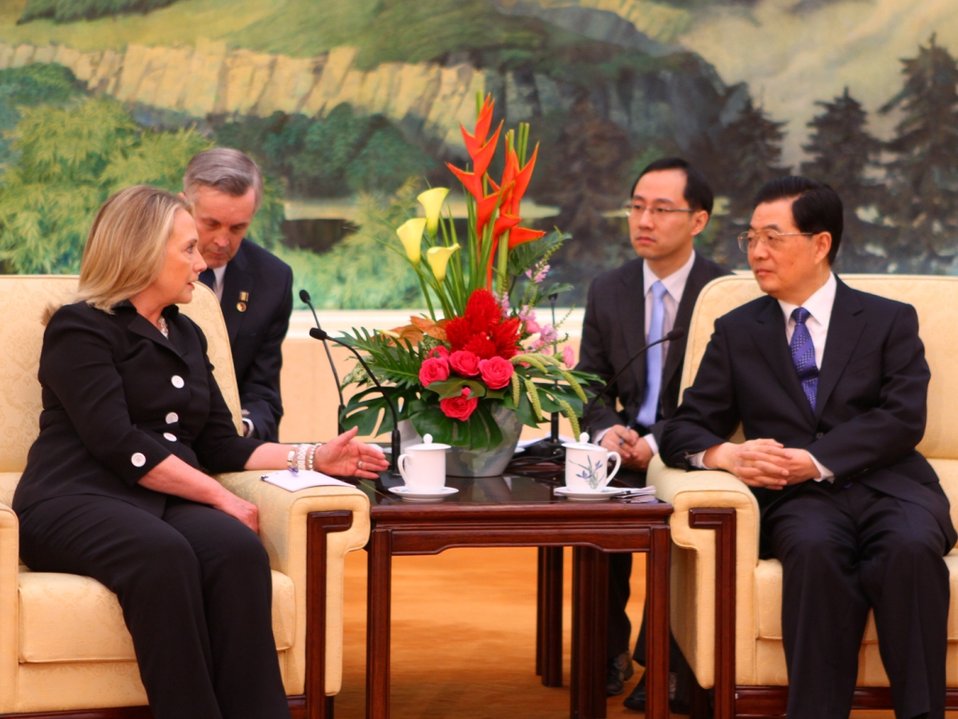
Secretary Clinton Meets With Chinese President Hu Jintao

U.S. Secretary of State Hillary Rodham Clinton meets with Chinese President Hu Jintao at the Great Hall of the People in Beijing, China, September 5, 2012.